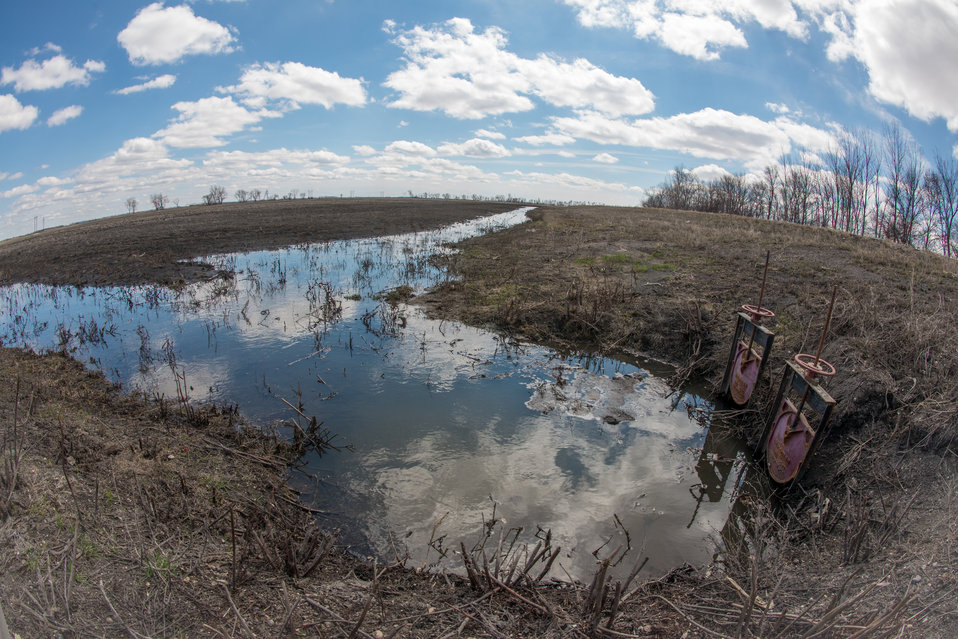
William Lisberg used the U.S. Department of Agriculture (USDA) Environmental Quality Incentives Program (EQIP) to receive an incentive payment to help in the cost of ring dike construction around his farmstead in Cass County, ND, on Tuesday, April 30, 2013. A week ago, the farmstead was covered in snow. Now thawed, the water fills the drainage on the outside of the ring dike. The valves hold back water from his home, farm structures, and equipment.